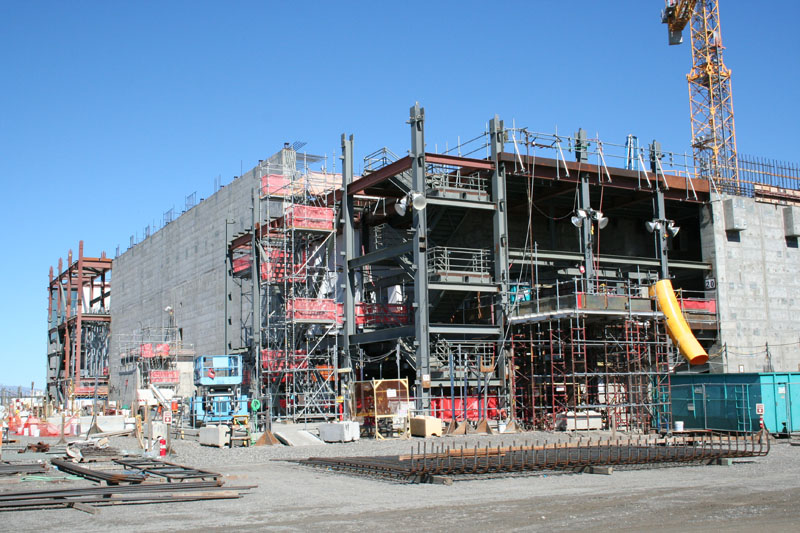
The southeastern exterior corner of the High-Level Waste Facility